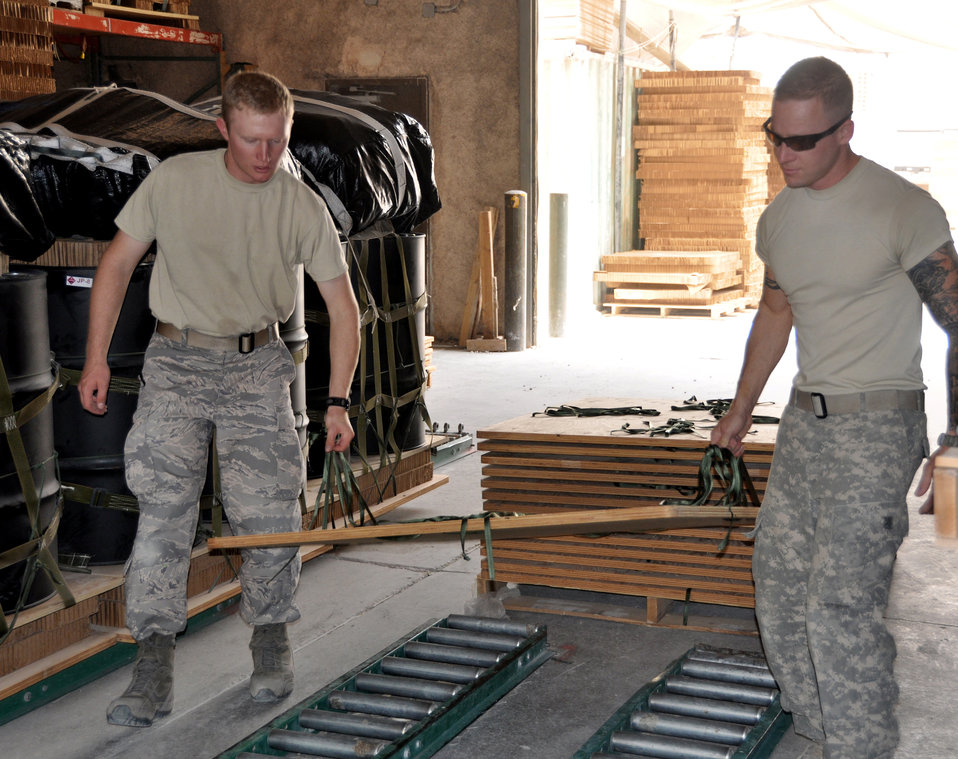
USAFA

U.S. Air Force Academy Cadet 1st Class Jordan Wittman helps Staff Sgt. Matthew Jones lay out bare pallets on the assembly line at the U.S. Army Riggers detachment June 18, 2011, in Southwest Asia. Cadet Wittman is taking part of